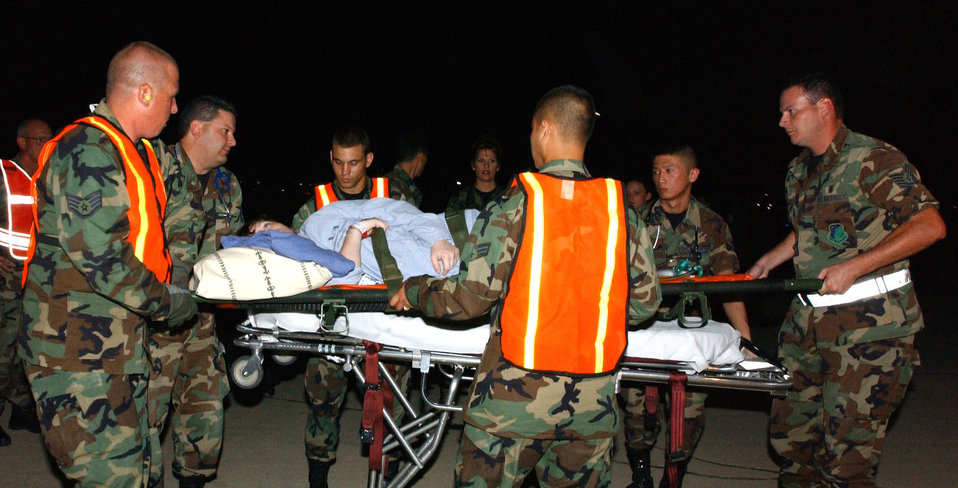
Hurricane Katrina medical evacuations

LACKLAND AIR FORCE BASE, Texas - A medical patient evacuated from Keesler Air Force Base, Miss., in the wake of Hurricane Katrina is unloaded from a C-17 Globemaster III here Aug. 30. Her medical care will be continued at Wilford Hall Medical Center. The aircrew is from the Mississippi Air National Guard.